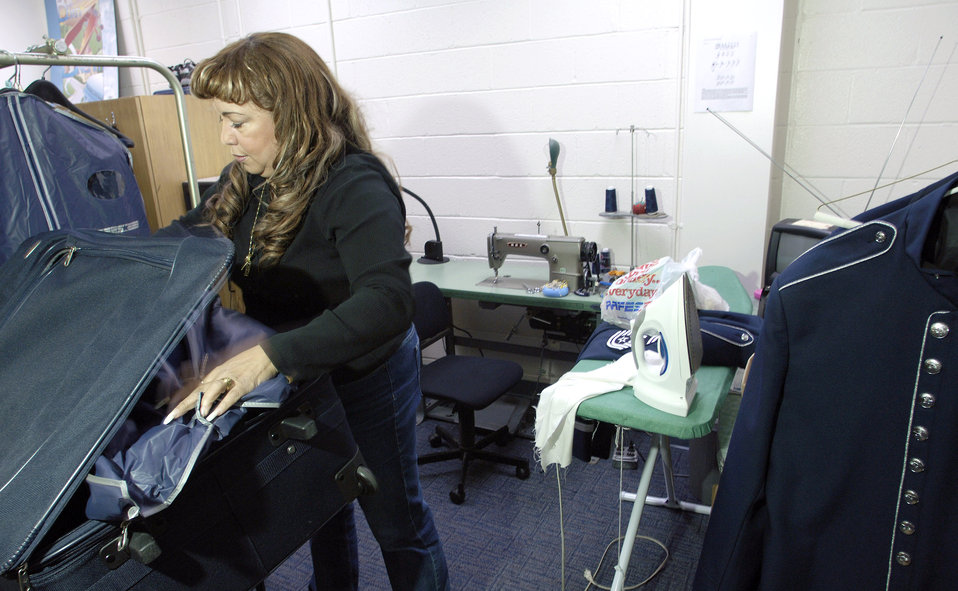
Band Seamstress

BOLLING AIR FORCE BASE, D.C. (AFPN) -- Retired Senior Master Sgt. Juanita Williams packs up some of the many U.S. Air Force Band uniforms she helps maintain. Ms. Williams volunteers her time once a week to help keep band members here looking their best for their many performances throughout the Washington, D.C. area and on their world travels. She was a part of the band for many years before her retirement in 1995.